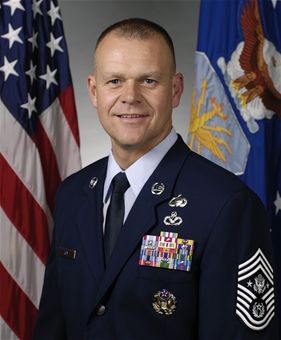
CMSAF James A. Roy

Chief Master Sgt. of the Air Force James A. Roy is the 16th chief master sergeant appointed to the highest noncommissioned officer position. He represents the highest enlisted level of leadership.